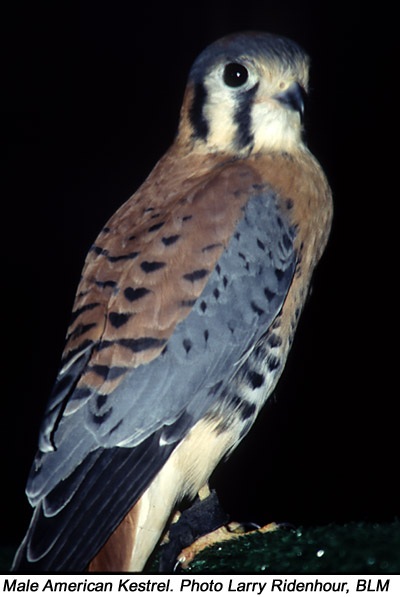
Snake River Birds of Prey National Conservation Area American Kestrel Birds Birds of Prey Wildlife